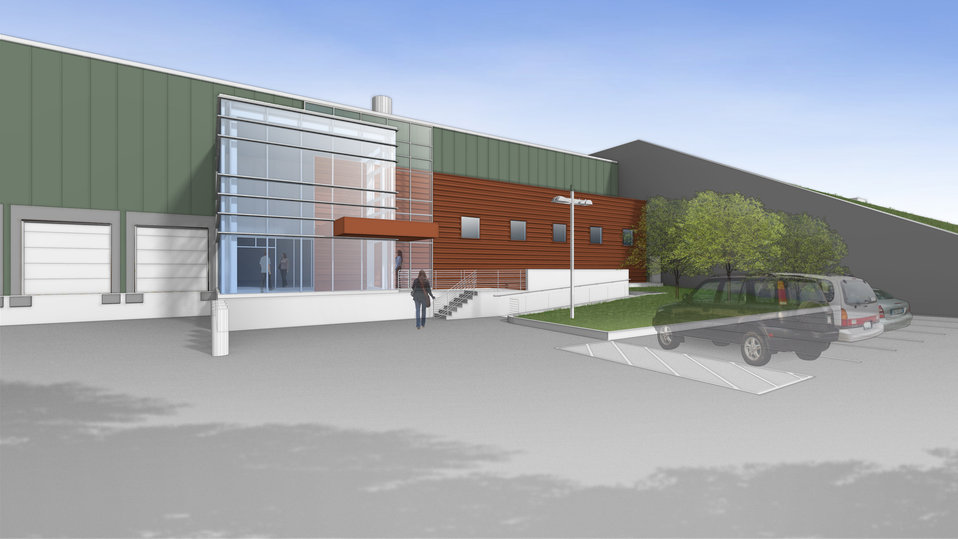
Rendering of the entrance of the Nova Detector Facility. Rendering by Holabird and Root.

The construction of the facility is supported under a cooperative agreement for research between DOE and the University of Minnesota. The construction will result in procurement for concrete, steel, road building materials and mechanical and electrical equipment from U.S. firms. The NoVA project involves about 180 scientist and engineers from 28 institutions.